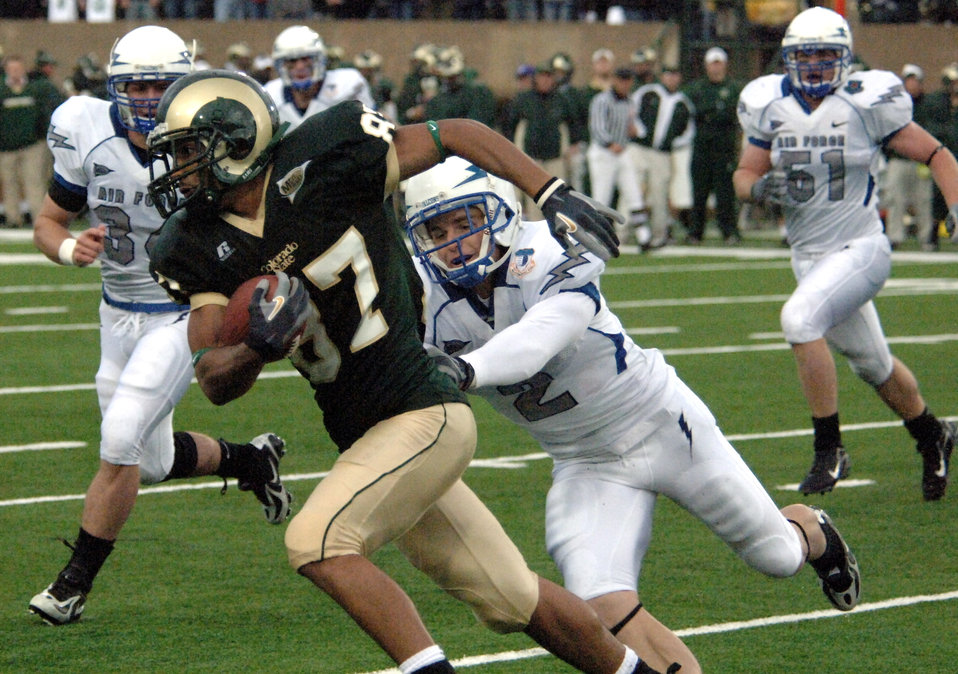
Football: Falcons, Hall run roughshod over CSU

Falcon cornerback Carson Bird, 2, runs down Colorado State wide receiver Damon Morton during Air Force's 45-21 victory over the Rams Oct. 13 in Fort Collins, Colo., as teammate Chris Thomas closes in. Bird led the aggressive Air Force secondary with two interceptions.